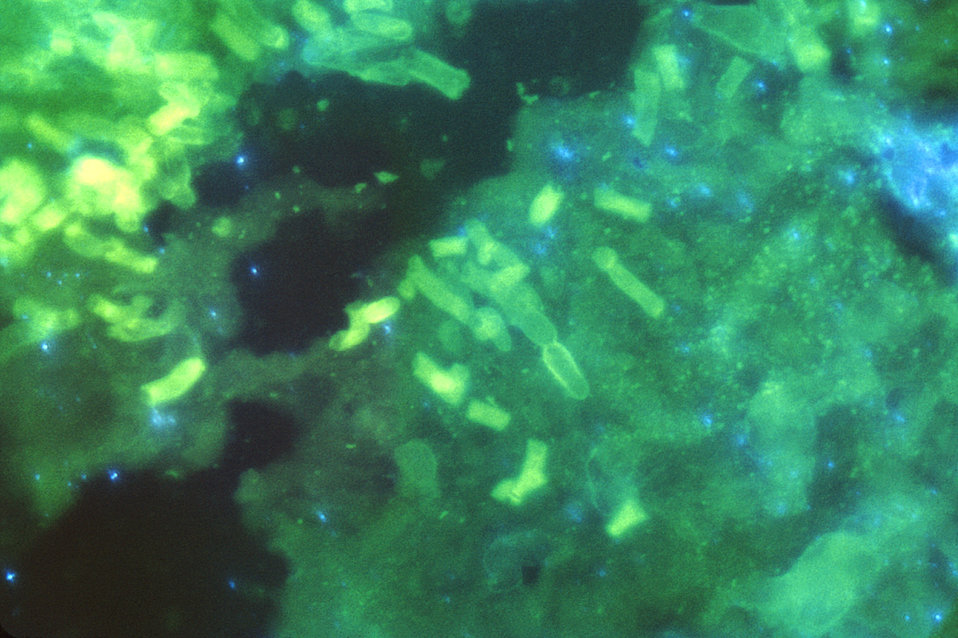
Magnified 562X, this photomicrograph revealed the presence of Candida sp. yeast organisms by using an ",Aspergillus" conjugate fluoroescent antibody (FA) staining technique.